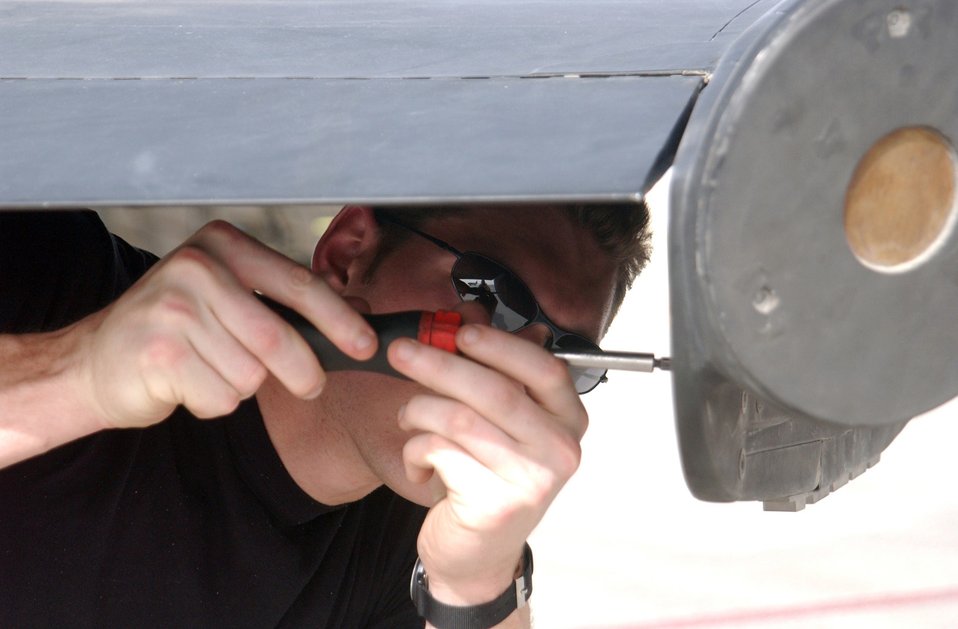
U-2 maintainers boast streaking hot record

Airman 1st Class Justin Emmett tightens a screw on a U-2